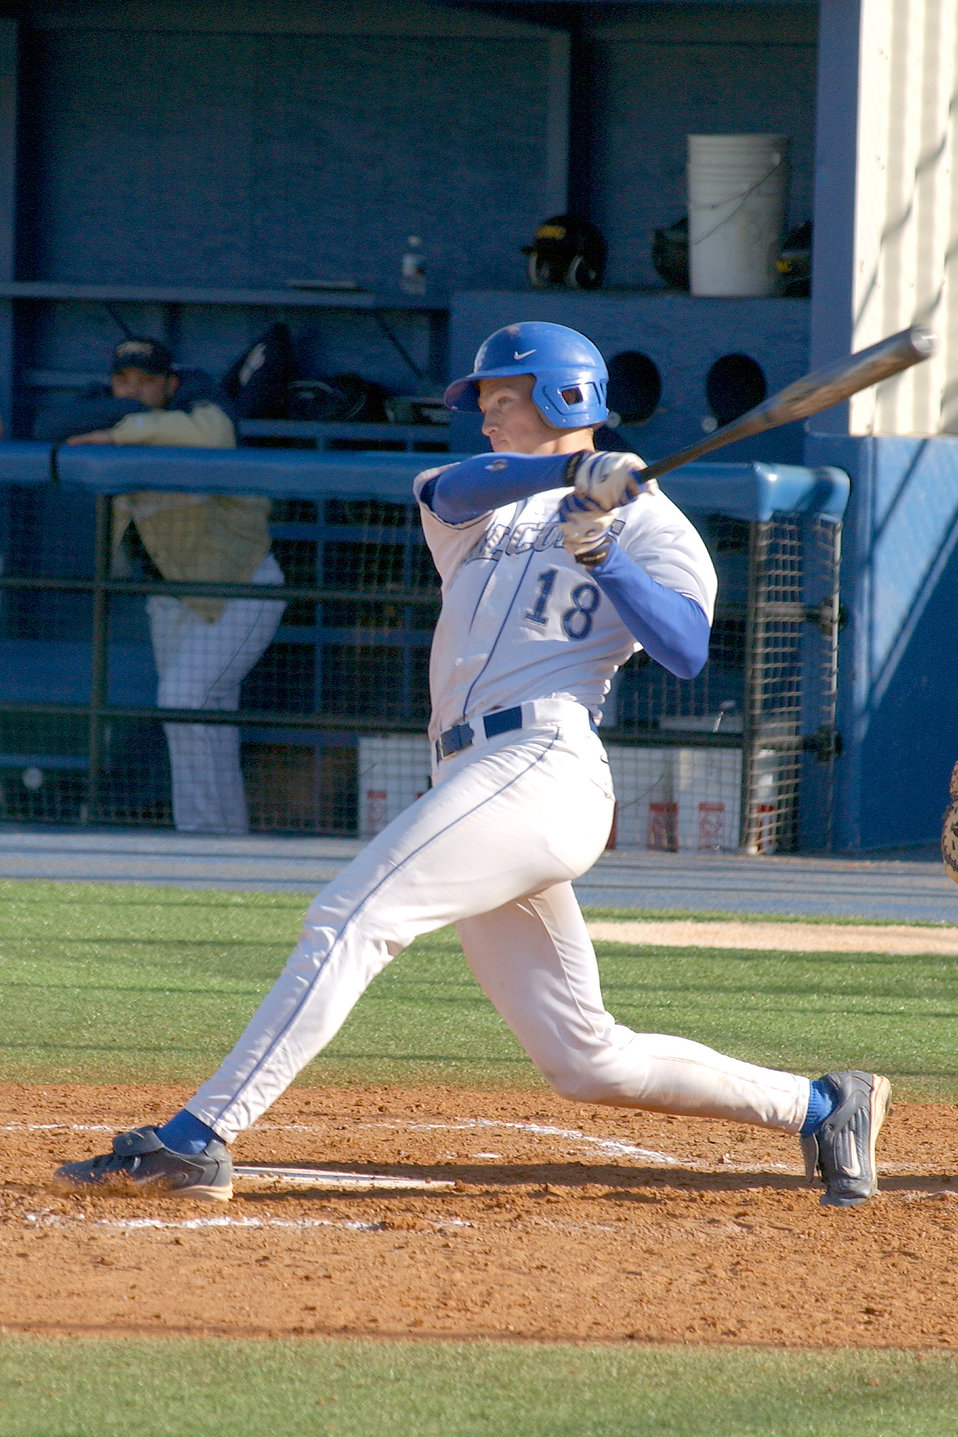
Baseball

GREELEY, Colo. (AFPN) -- Outfielder Dale Kasel had his finest baseball game as a Falcon, going 3-for-4 with three runs and three RBIs. The Air Force Academy baseball team (5-14) split a midweek doubleheader with the University of Northern Colorado (13-8) on March 16 at Jackson Field here.